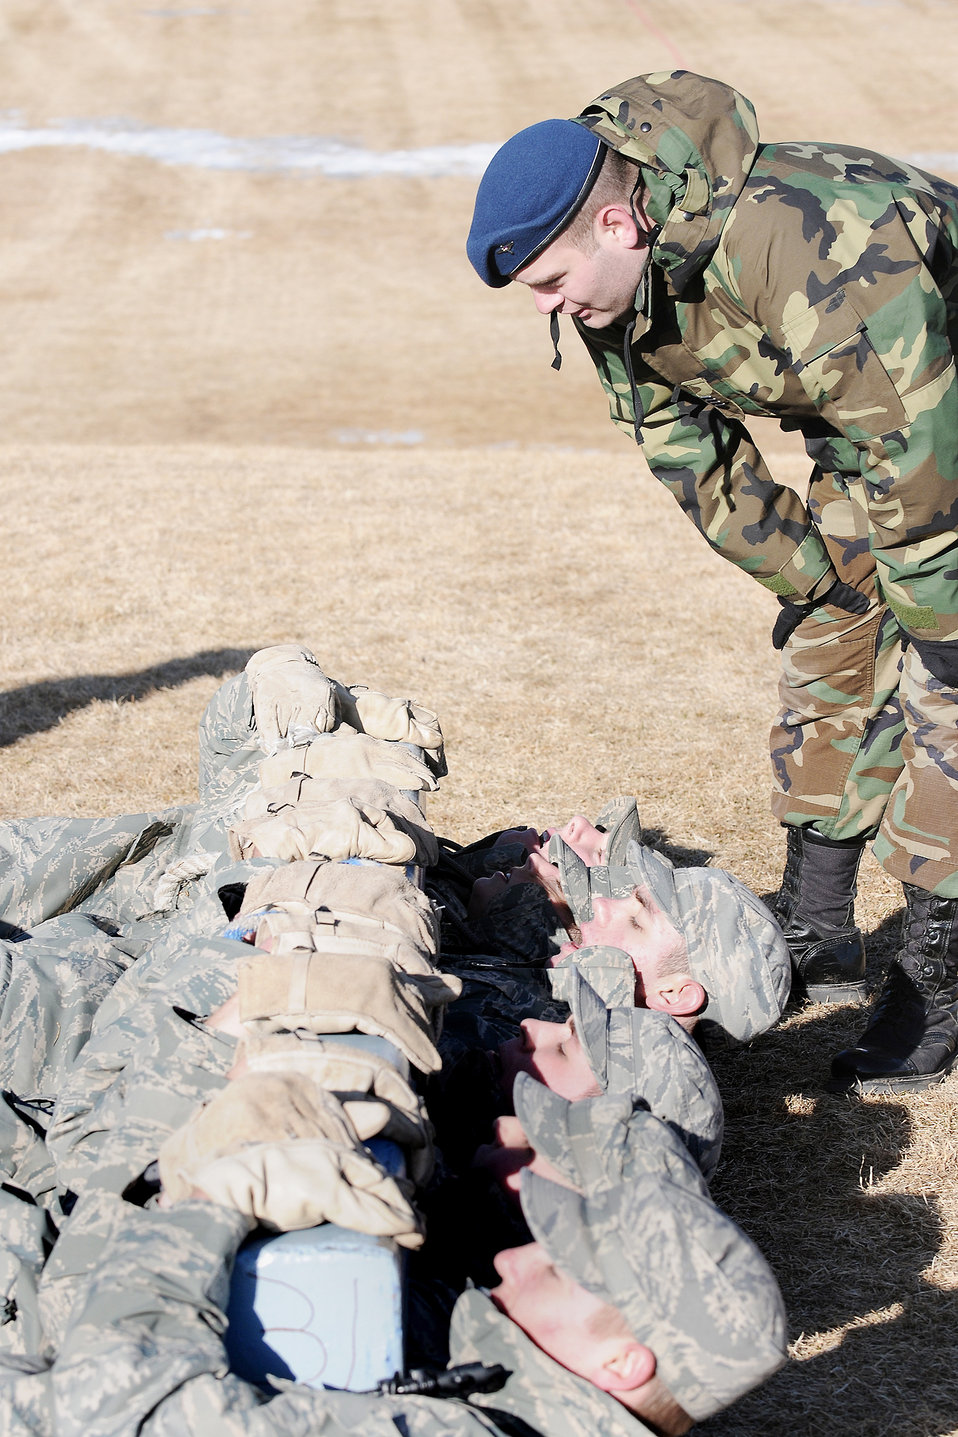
Recognition Days

Senior Zack Bartsch directs the members of Cadet Squadron 31 during Recognition events on March 12, 2010 at the U.S. Air Force Academy. Recognition events conclude with the freshmen earning the Prop and Wings insignia, signifying their transition from underclassmen to upper class cadets.